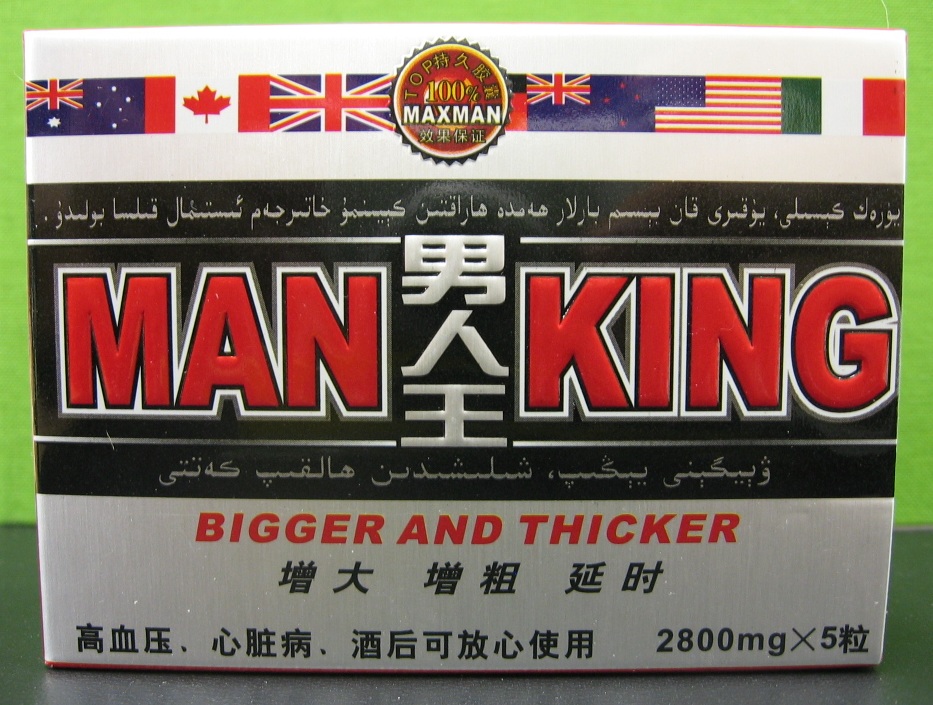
Man King

February 18, 2012 - The FDA is advising consumers not to purchase or use 'Man King ,' a product promoted and sold for sexual enhancement. The product was found to contain undeclared sildenafil. For more information, go to www.fda.gov/Drugs/ResourcesForYou/Consumers/BuyingUsingMe...

And read this Consumer Update: Beware of Fraudulent ‘Dietary Supplements’